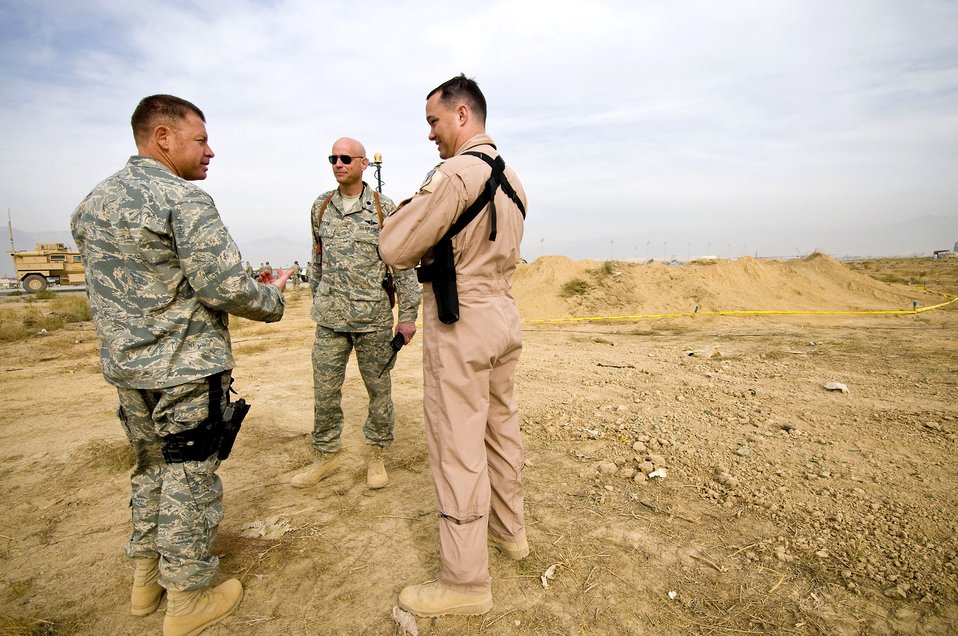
Airmen respond to buried threat in Afghanistan

Lt. Col. Kevin Virts, Lt. Col. Wayne Straw and Capt. Michael Mayo make a post-action review of the controlled burn Nov. 7 at Bagram Airfield, Afghanistan. Colonel Virts and Captain Mayo successfully coordinated the evacuation of aircraft and thousands of personnel for the disposal of a Soviet OFAB 100 bomb weighing 220 pounds. Colonel Virts, Colonel Straw and Captain Mayo are assigned to the 455th Expeditionary Operations Support Squadron.